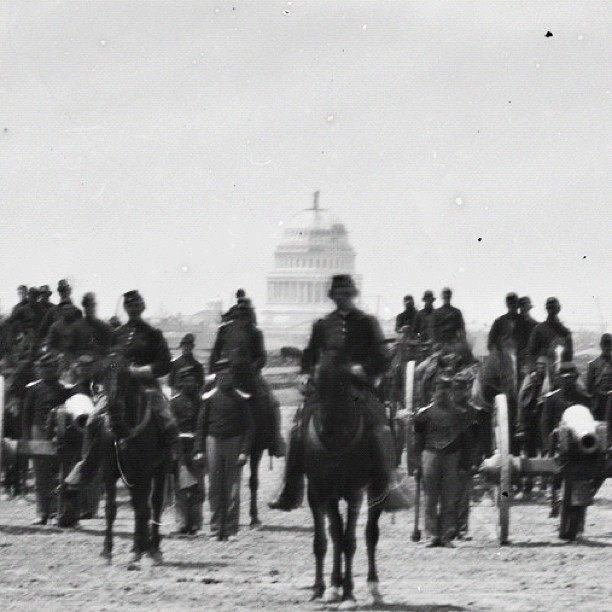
Remembering our veterans, past and present. Thank you for your service.